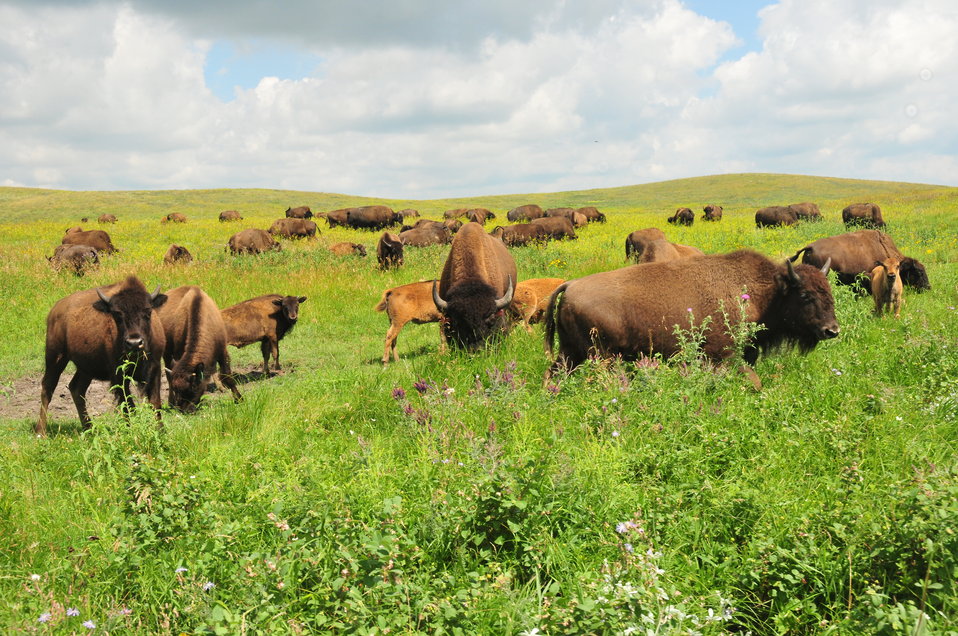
Bison on Ordway Prairie 2

Bison graze on Ordway Prairie owned and managed by the Nature Conservancy. Site has a USFWS grassland easement protecting it in perpetuity. It is situated in the center of a large block of the Prairie Pothole Region protected through perpetual grassland and wetland easements. In addition the USFWS owns and manages thousands of acres in fee title on Waterfowl Produtction Areas in the area.